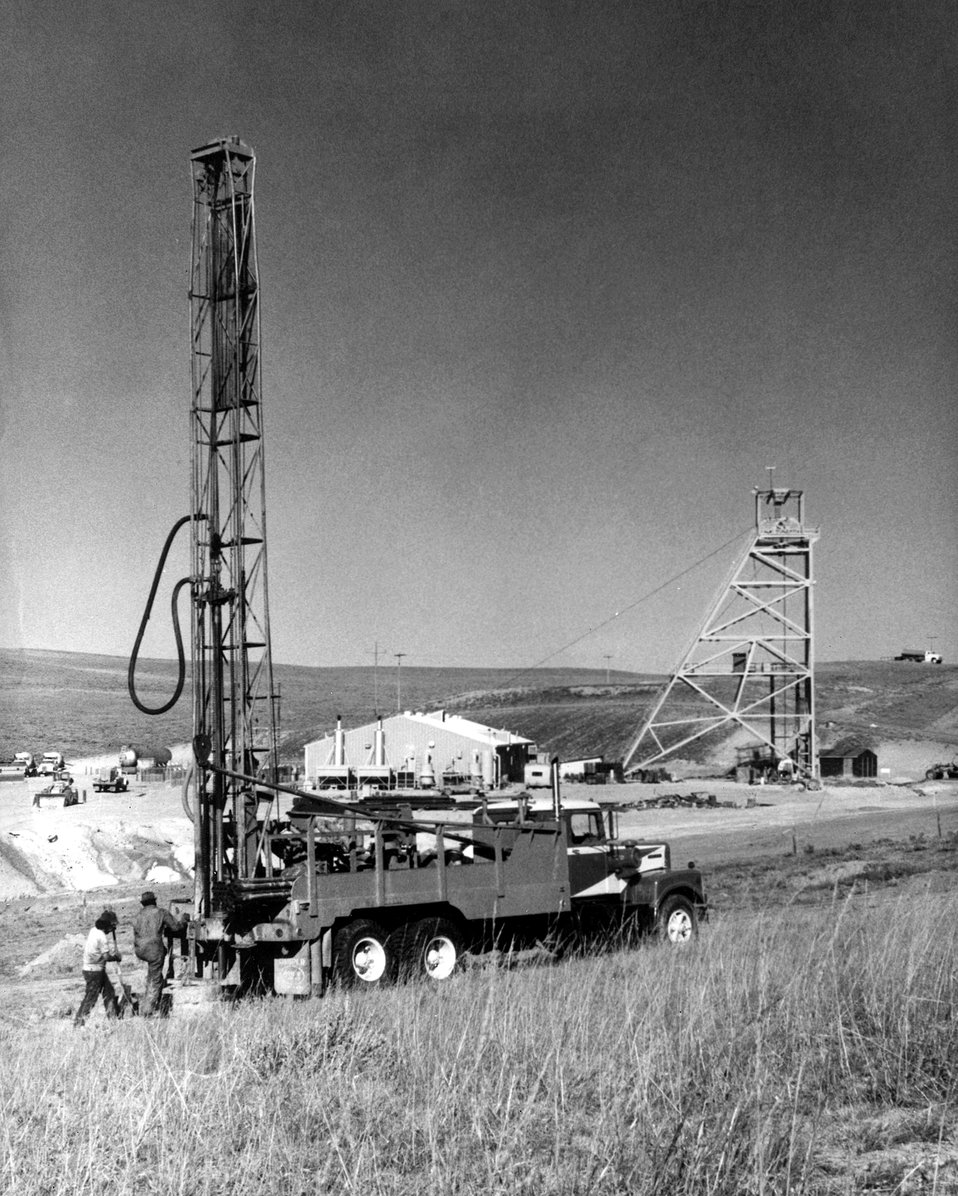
A head frame, a core drilling rig and a field work station mark the location of Kerr-Mc Gee's Bill Smith Uranium Mine in the Powder River Basin in Wyoming. c. 1976